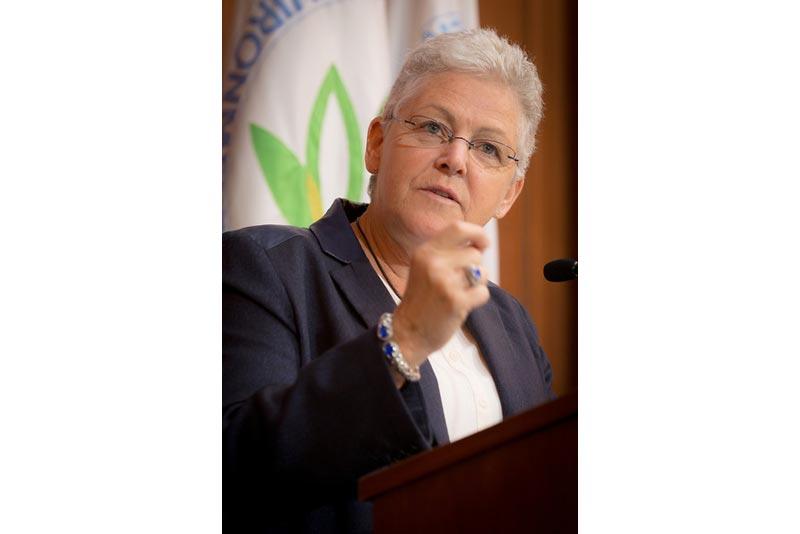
Day in the Life - June 2, 2014

10:37 am - The Speech. (7/15)